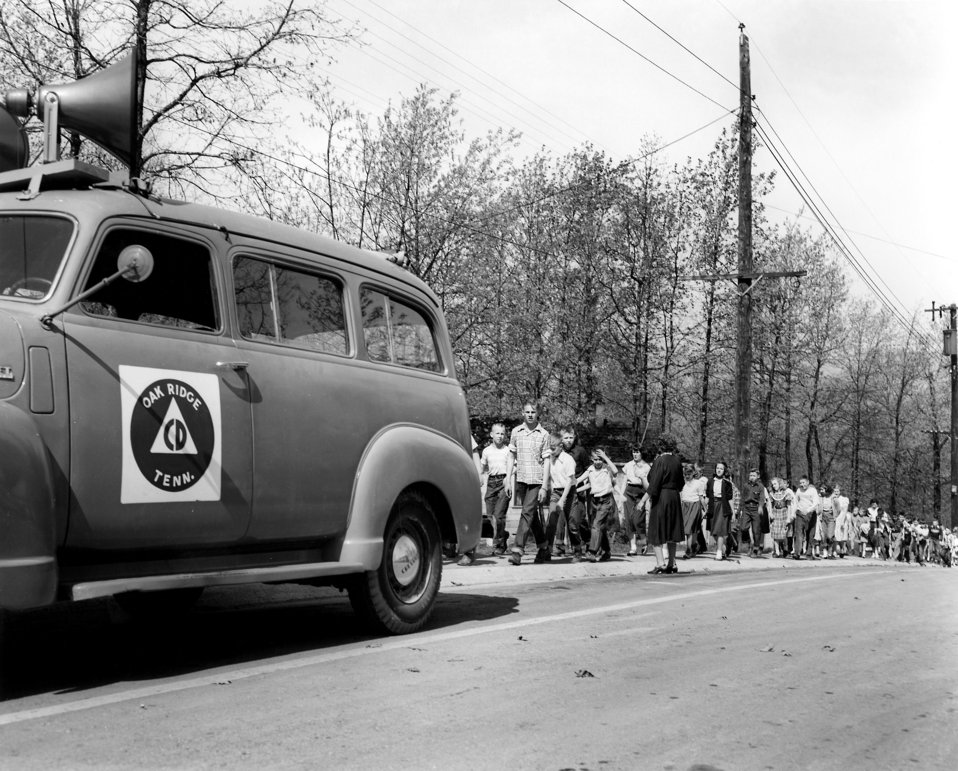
Civil Defense Air Raid Drill Oak Ridge 1953

8934-9 DOE photo H.P. Tarver 4-9-1953 Highland View School Oak Ridge Tennessee